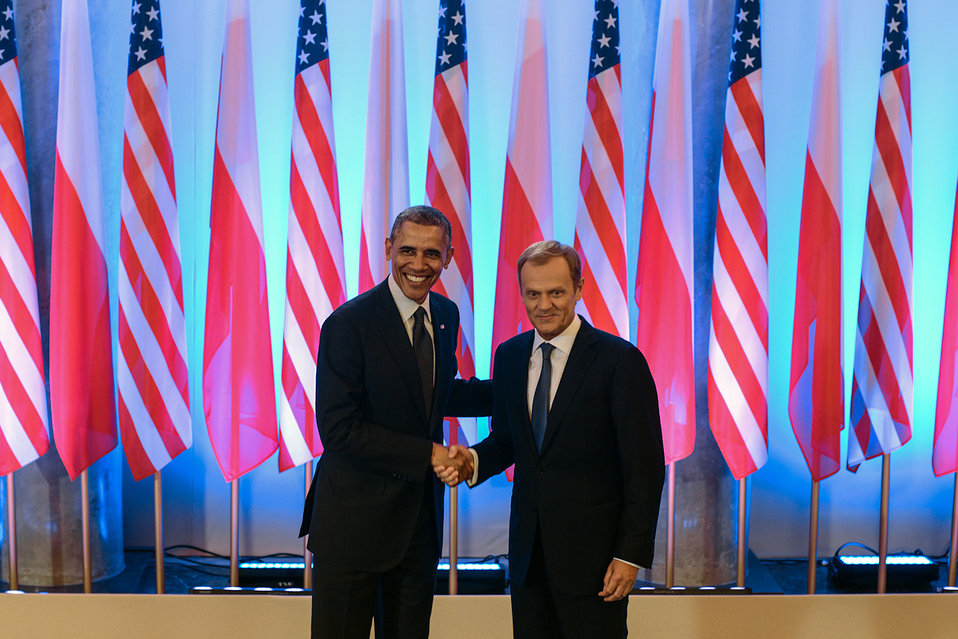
President Obama Shakes Hands With Polish Prime Minister Tusk

U.S. President Barack Obama shakes hands with Polish Prime Minister Donald Tusk after they made statements to reporters in Warsaw, Poland, on June 3, 2014. [U.S. Mission to Poland photo by Jakub Szymczuk]